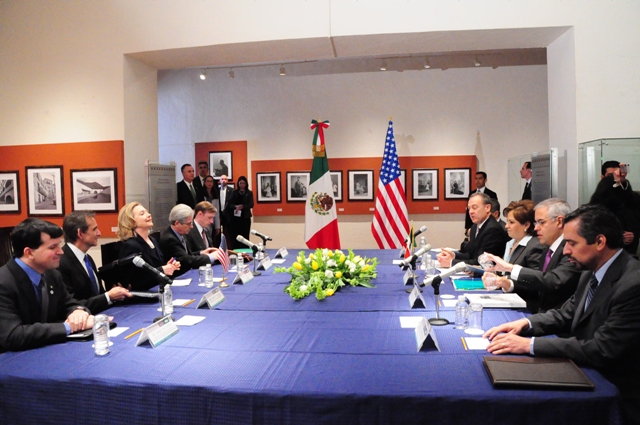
Secretary Clinton, U.S. Delegation, and Mexican Foreign Secretary Espinosa, Mexican Delegation Discuss Bilateral Issues

U.S. Secretary of State Hillary Rodham Clinton and the U.S. delegation, left, as well as Mexican Foreign Secretary Patricia Espinosa and the Mexican delegation, right, discuss bilateral issues in Guanajuato, Mexico, on January 24, 2011.